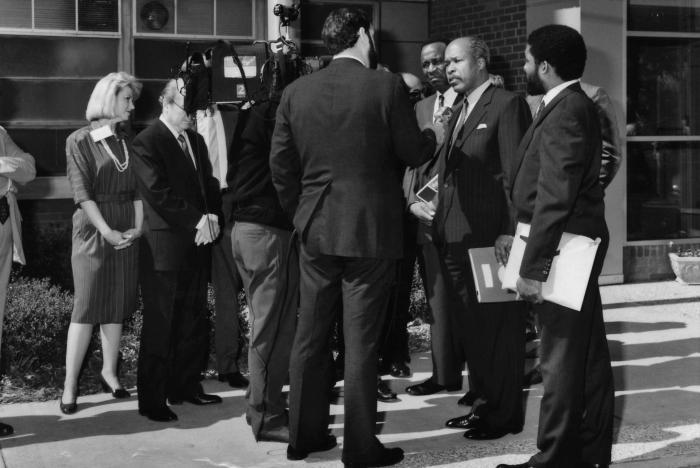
Former Secretary of Health and Human Services, Dr. Louis W. Sullivan, was shown here being interviewed by a local Atlanta television station during his 1989 visit to the Centers for Disease Control's Roybal Campus on Clifton Road, in Atlanta, Georgia.